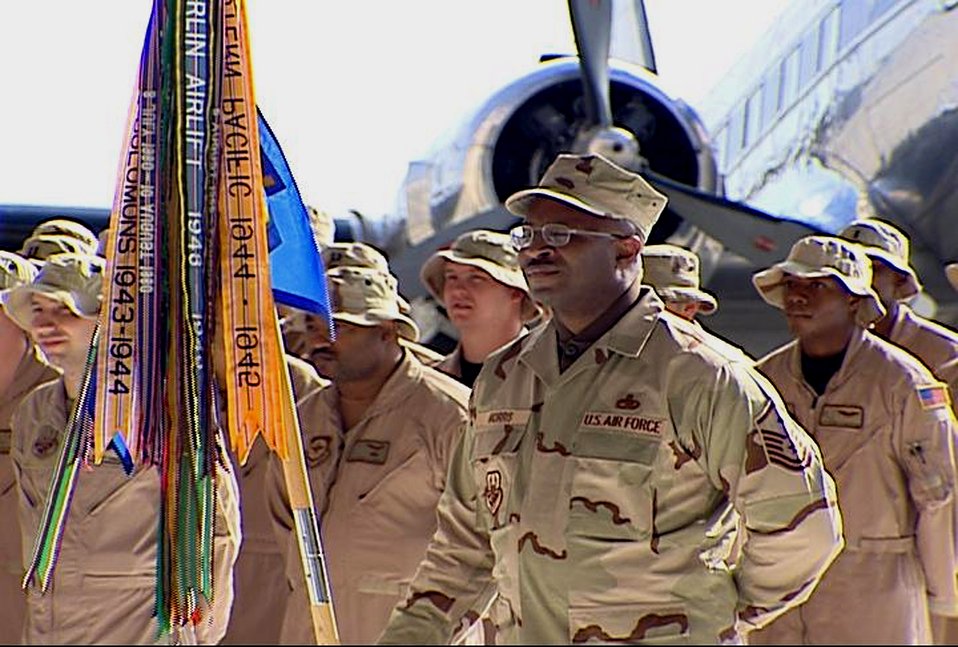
Pope unit begins transition to Little Rock

Airmen from the 41st Airlift Squadron stand in formation during the realignment ceremony Feb. 23 at Pope Air Force Base, N.C. The 41st AS